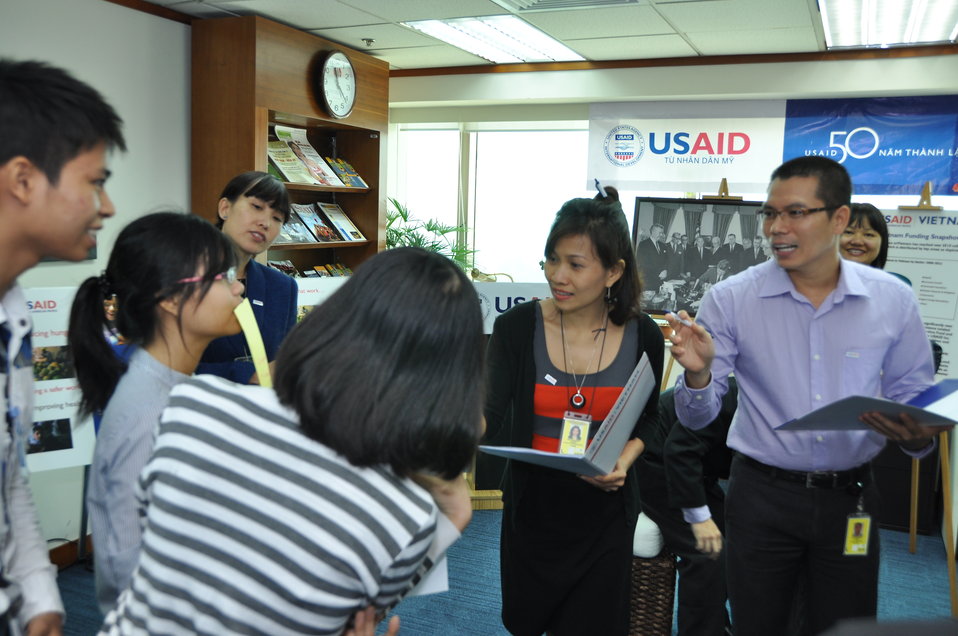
USAID Vietnam Open House 50th Anniversary, Hanoi